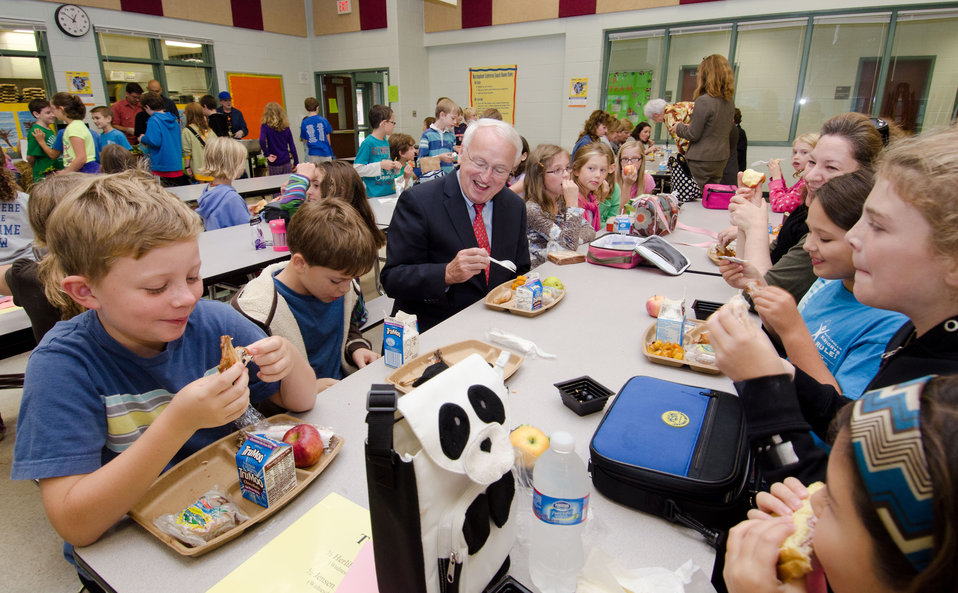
Under Secretary for Food, Nutrition and Consumer Services Kevin Concannon (red tie) spoke with his lunch mates during the school lunch program at Nottingham Elementary School in Arlington, VA, on Wednesday, October 12, 2011. Today's menu included roasted chicken, roasted butternut squash with dried cranberries, farm fresh mixed lettuce salad, turkey wraps, pita wedges, hot muffins, carrots, pears and more choices.